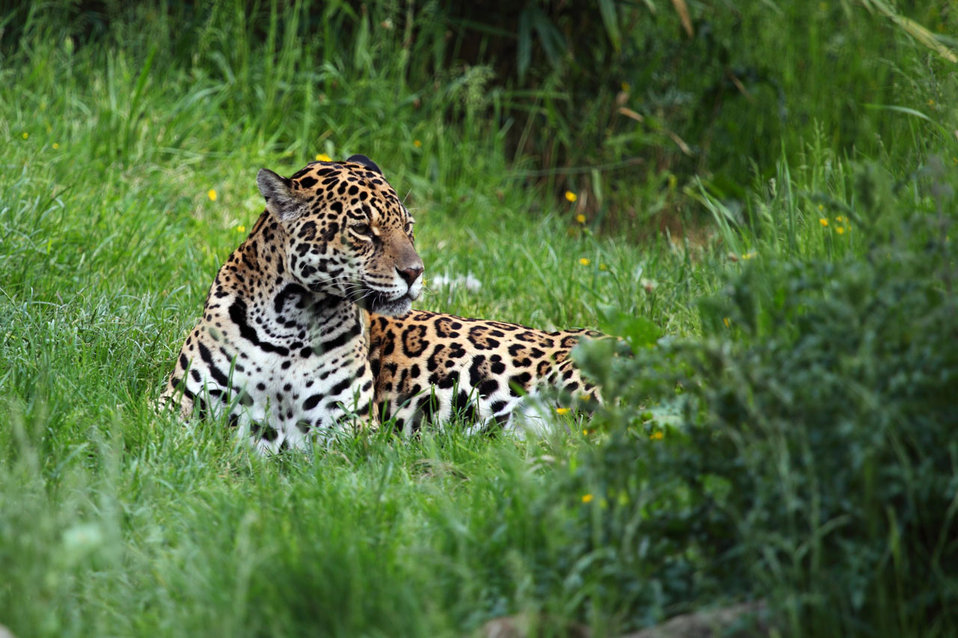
Jaguar lying in grass.